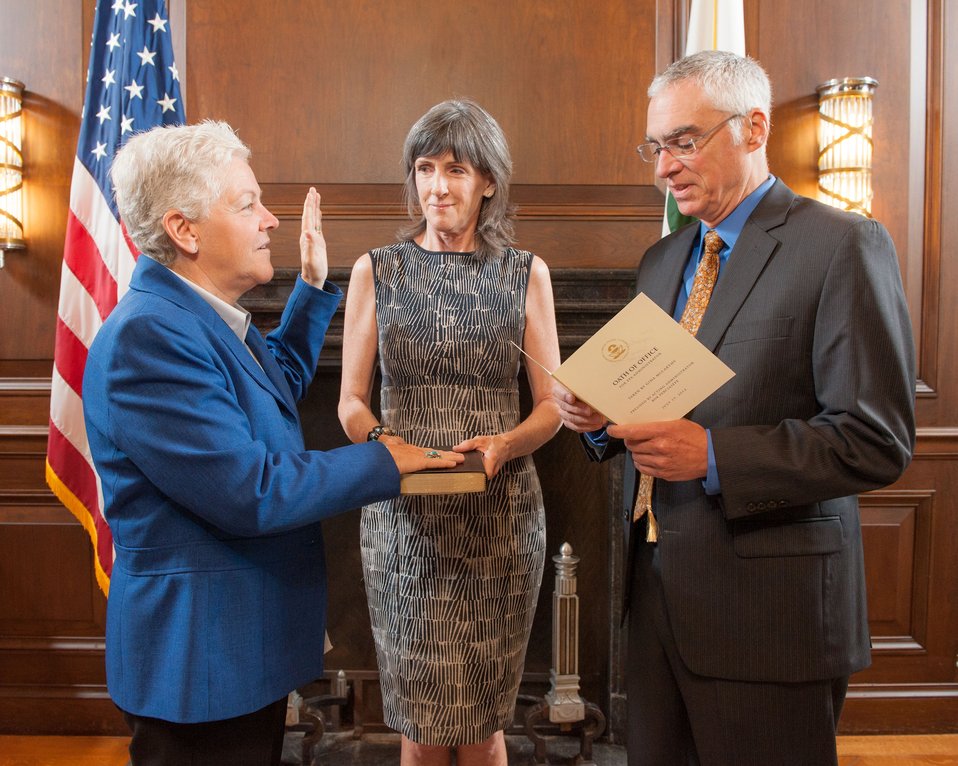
July 19, 2013 – Gina McCarthy sworn in as Administrator of the U.S. Environmental Protection Agency

This morning Gina McCarthy, who was confirmed yesterday by a 59-40 Senate vote to head the U.S. Environmental Protection Agency, was sworn in during a private ceremony held at EPA’s headquarters in Washington. Gina was sworn in by EPA Deputy Administrator Bob Perciasepe, who has served as the Agency’s interim chief since the departure of Lisa P. Jackson, and the official Bible was held by former EPA Administrator Carol Browner.

USEPA Photo by Eric Vance. Public domain image